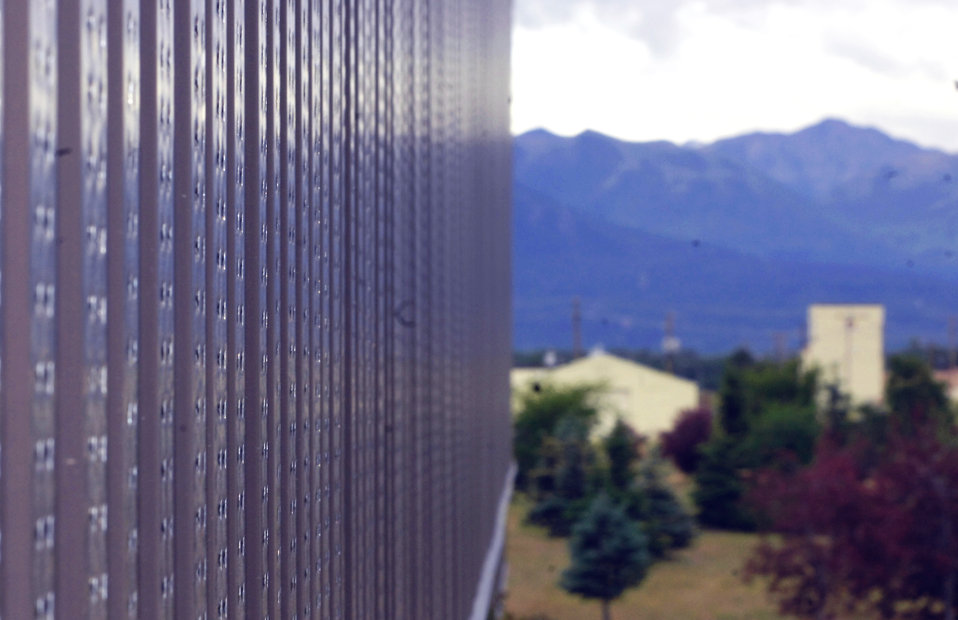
Solar wall saves Air Force money

A solar wall collects rays at Elmendorf Air Force Base, Alaska. Two of these walls hang on the outside of the 3rd Logistics Readiness Squadron, and have saved base officials $15,000 in energy costs since November 2008 when they were built.